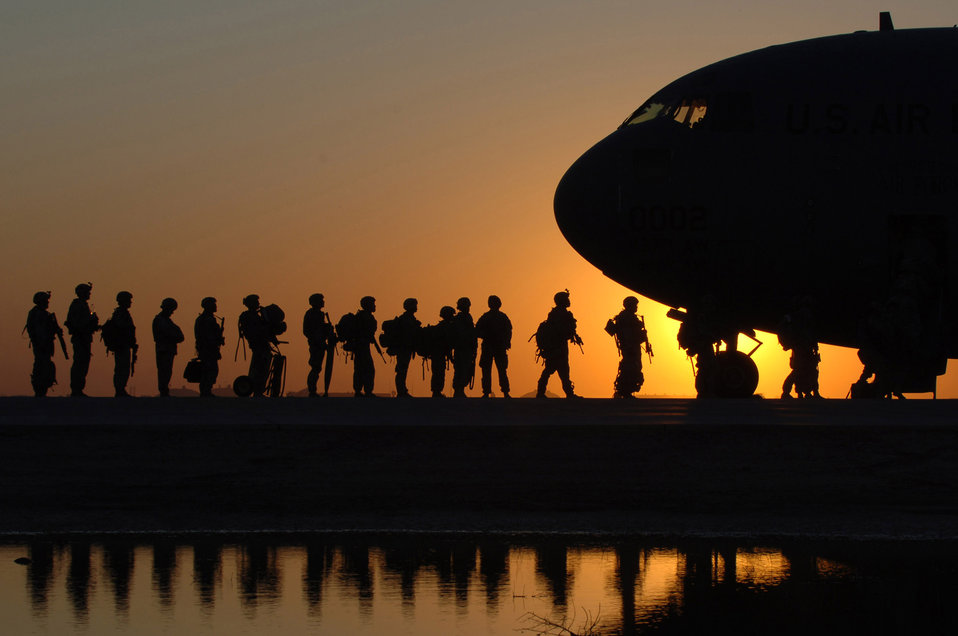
Leaving on a jet plane

The sun sets behind a C-17 Globemaster III as Soldiers wait in line to board the aircraft taking them back to the United States Nov. 17 at Joint Base Balad, Iraq. C-17s can carry payloads up to 169,000 pounds and can land on small airfields. The C-17 is deployed from the 437th Airlift Wing at Charleston Air Force Base, S.C.